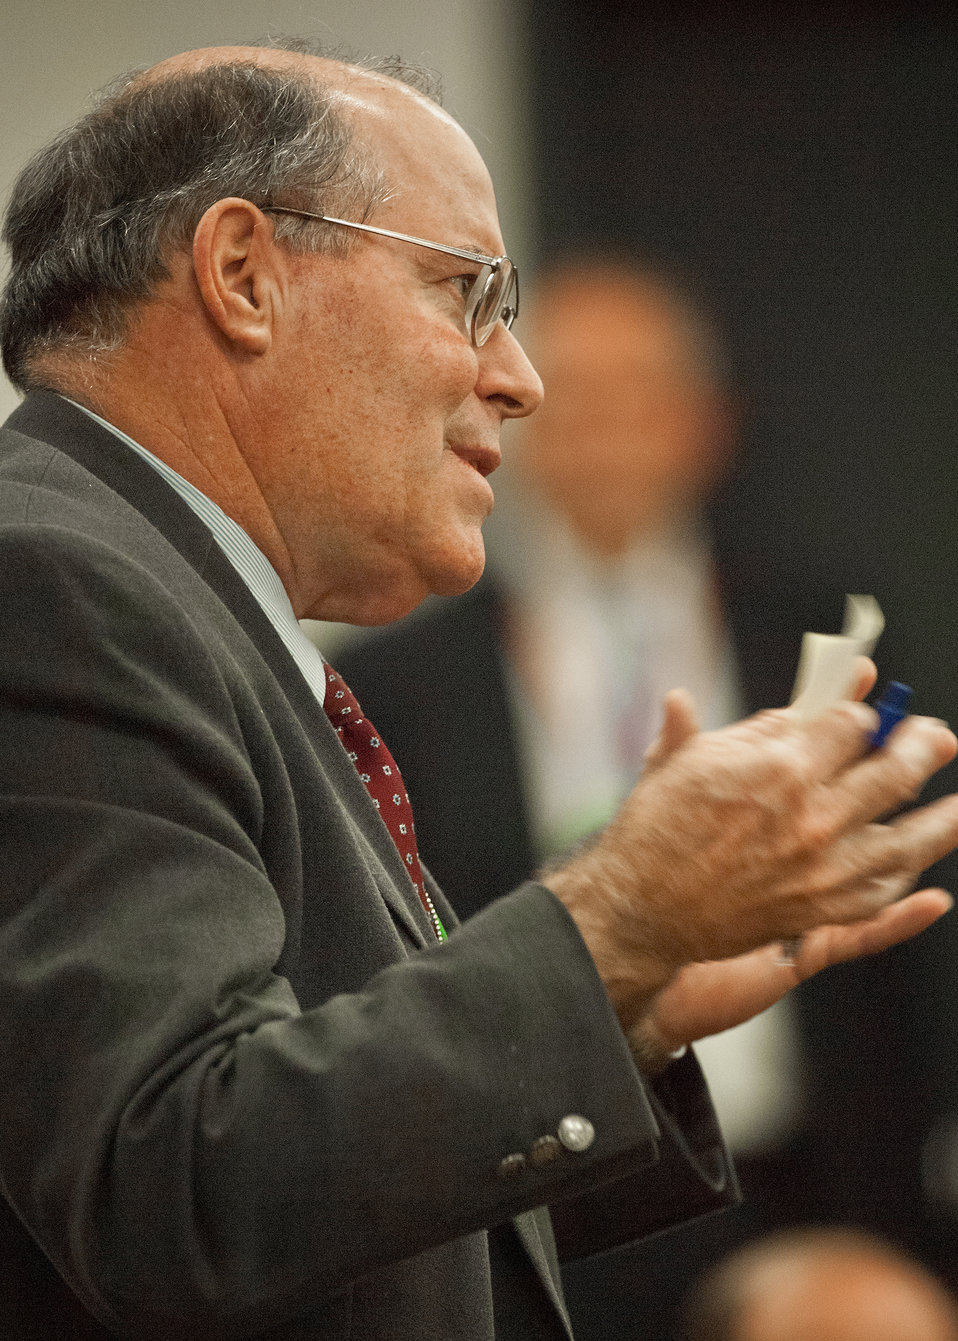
Bob Tabb, Deputy Commissioner, West Virginia Department of Agriculture poses a question at the 11th Annual Meeting of State Agriculture and Rural Leaders at the Eisenhower Executive Office Building in Washington, D.C., Friday, January 6, 2012.